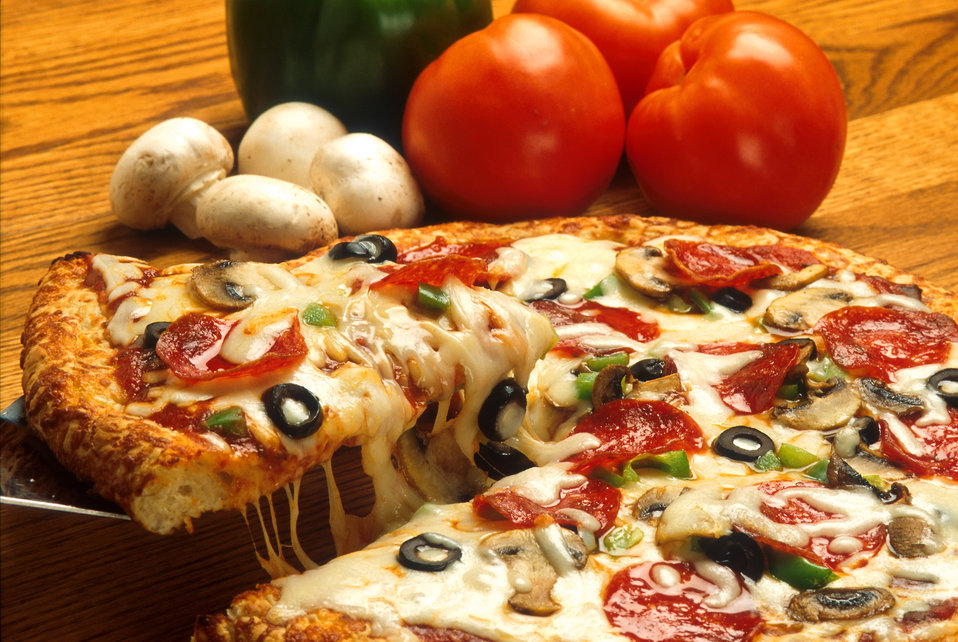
The pizza is one of America’s favorite foods.